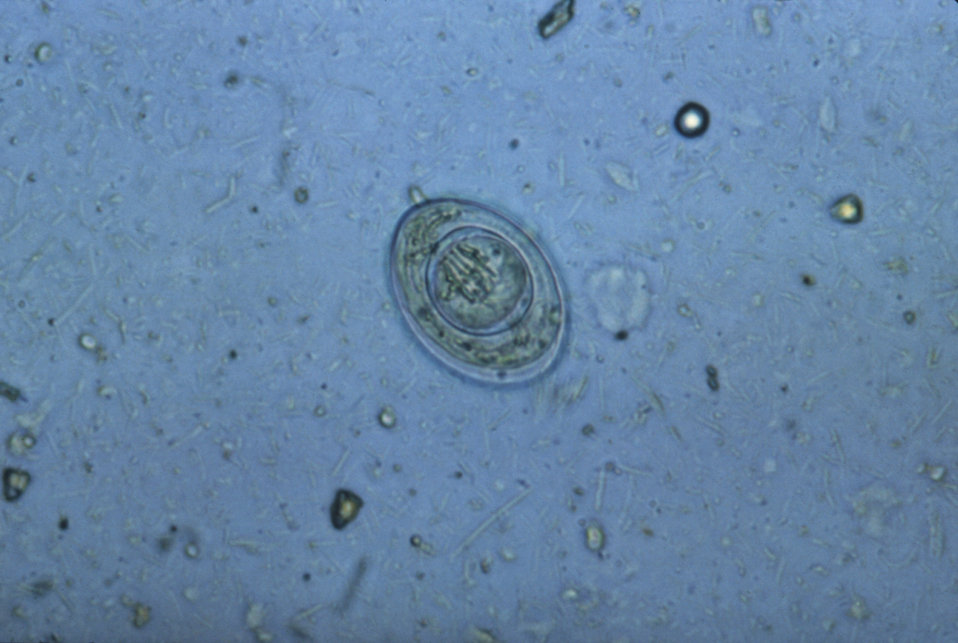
This micrograph depicts an egg from a Hymenolepis nana tapeworm, or cestode.